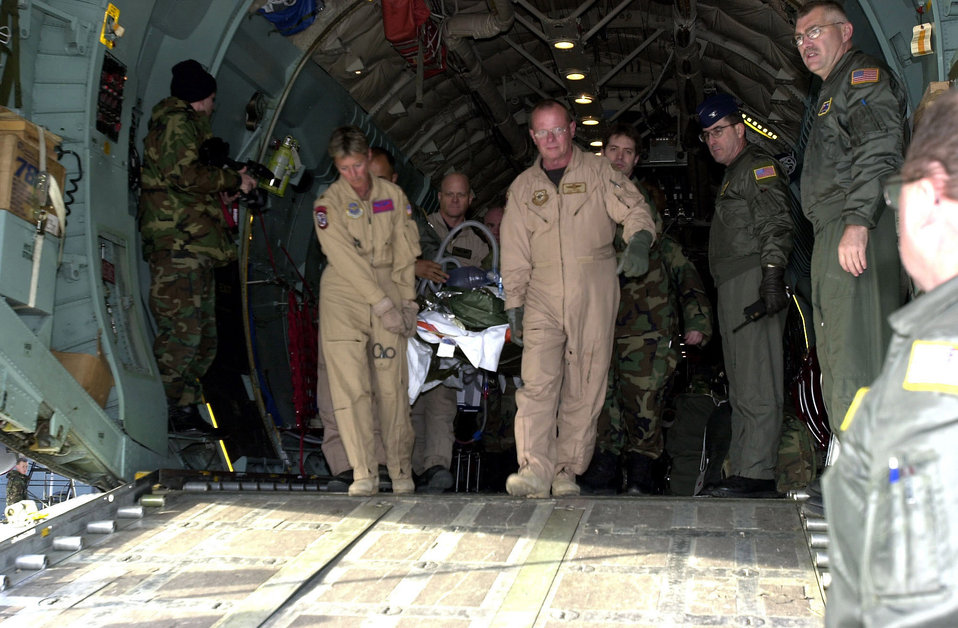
Medical Transport

OPERATION ENDURING FREEDOM -- Medical people at Ramstein Air Base, Germany, transport one of the 19 servicemembers who were injured during a friendly-fire incident in Afghanistan on Dec. 5, 2001. Fourteen of the soldiers arrived at Ramstein on Dec. 7 aboard a C-141 Starlifter from McGuire Air Force Base, N.J., and were transported to nearby Landstuhl Regional Medical Center for treatment. The soldiers, all members of elite special operations units, were injured Dec. 5 north of Kandahar, when ordnance dropped from a B-52H Stratofortress inadvertently struck near their position. The friendly-fire incident is currently under investigation.